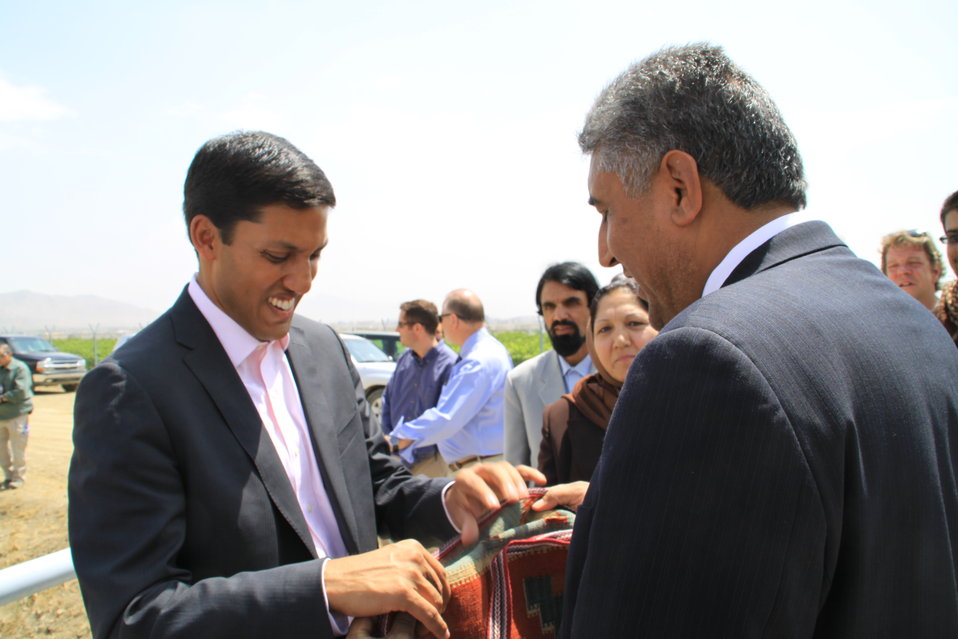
Badam Bagh Farm